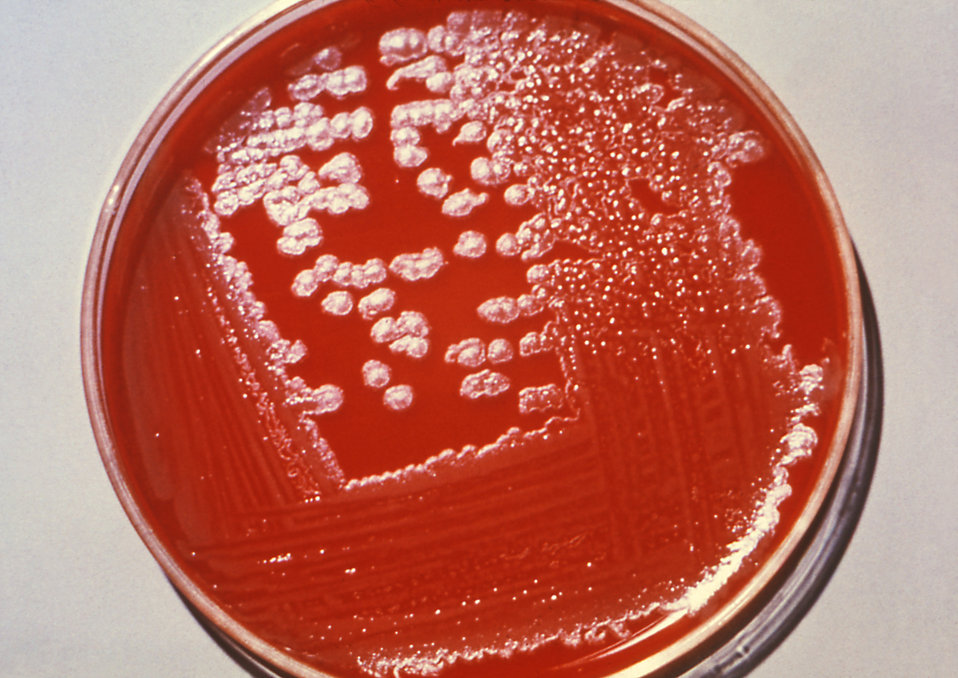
This agar culture plate is growing Bacillus anthracis colonies.